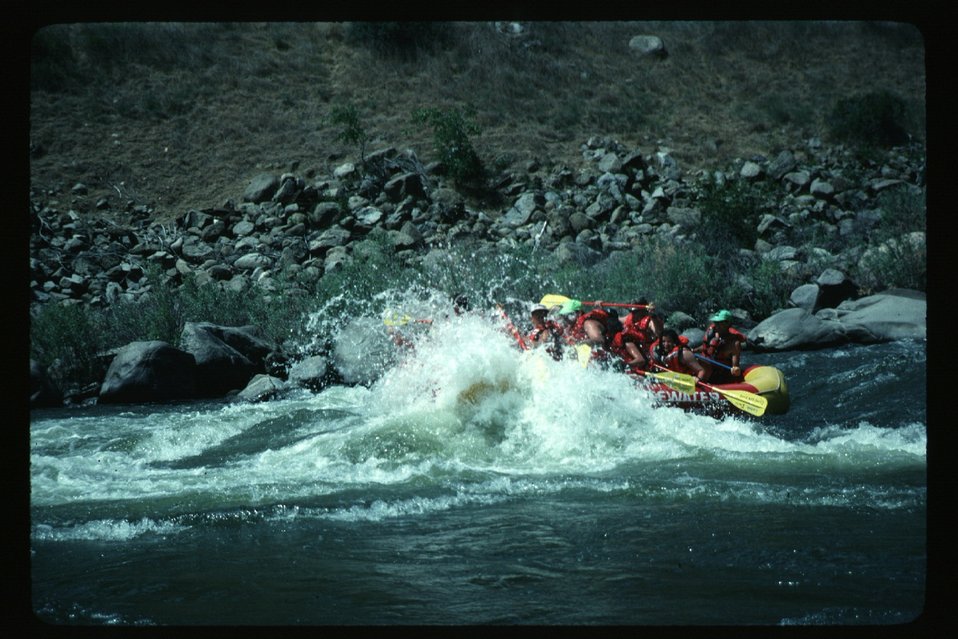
Main Payette Kayaker in white water Kayaking Four Rivers Field Office LSRD Lower Snake River District